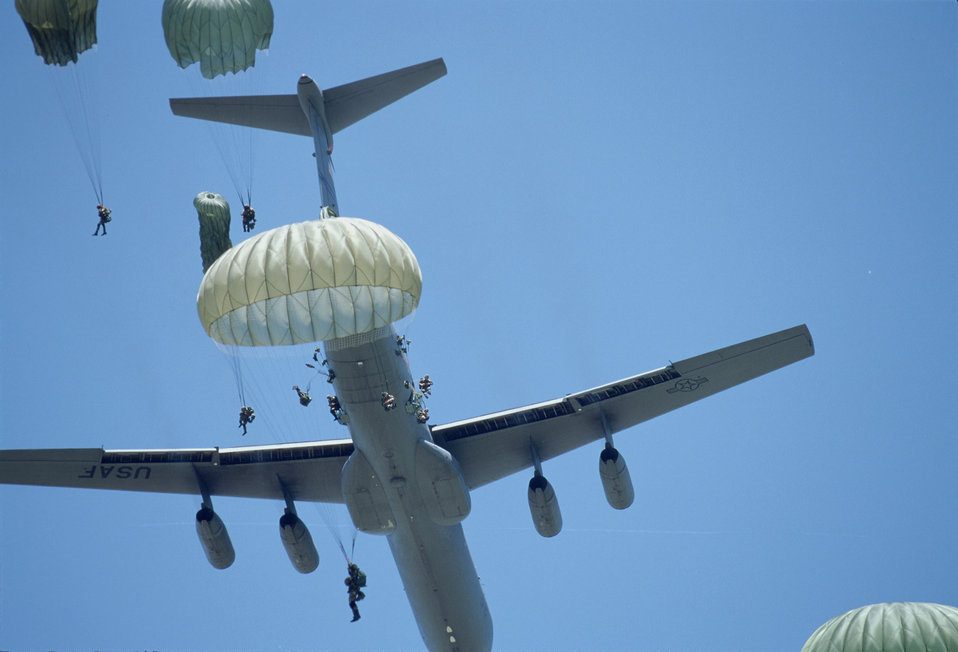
Geronimo!

MCGUIRE AIR FORCE BASE, N.J. -- Paratroopers from the 82nd Airborne jump from a C-141 Starlifter, June 3, 2000.